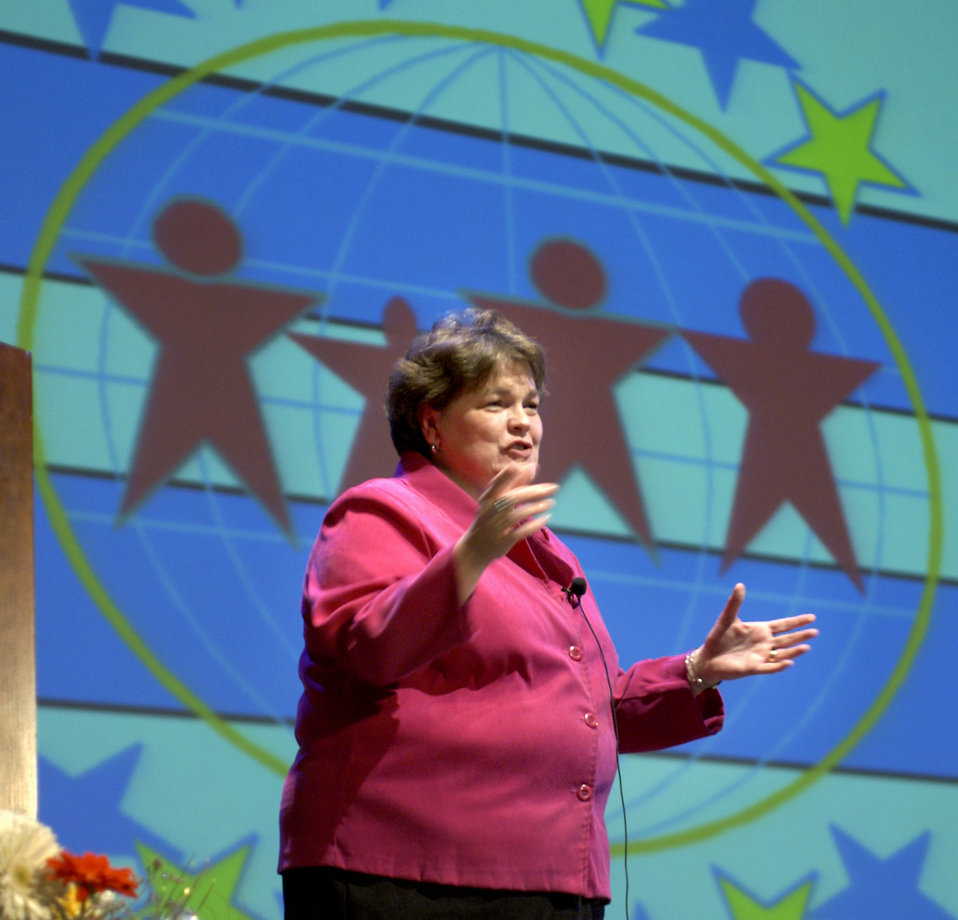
Military family support professionals gather for meeting of minds

LANSDOWNE, Va. -- Shirley C. Williams, deputy director of Air Force personnel policy, speaks during a weeklong conference here for directors of family support centers. Strengthening the Home Front was the conference theme, which brought the professionals together to discuss how to better serve Airmen and their families.